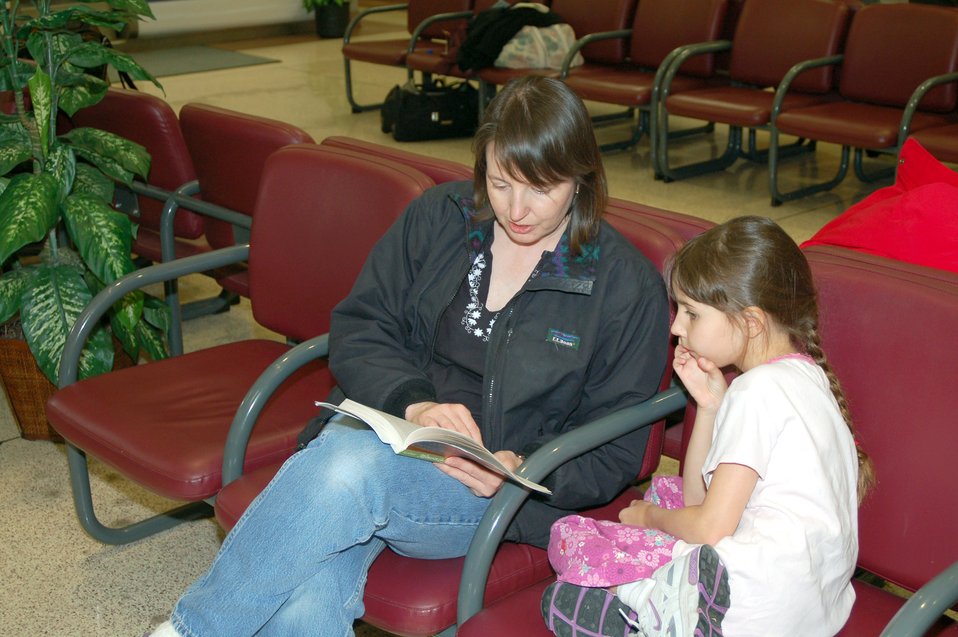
Take a 'hop' from Dover to tour U.S., Europe

Burnadette Walkins reads to her daughter, Adriana, as they wait for a space-available flight from Dover Air Force Base, Del., to Ramstein Air Base, Germany. Mrs. Walkins is the wife of Army Lt. Col. Paul Walkins, stationed at Stuttgart, Germany.